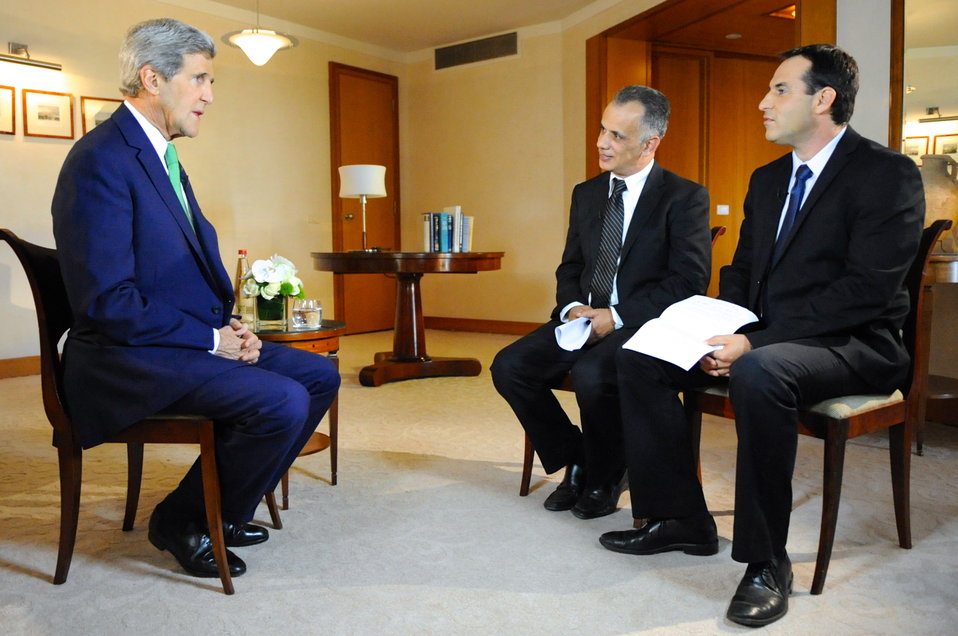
Secretary Kerry Participates in a Joint Interview With an Israeli and a Palestinian Journalist in Jerusalem

U.S. Secretary of State John Kerry sits across from Maher Shalabi of the Palestinian Broadcasting Corp. and Udi Segal of Israel Channel 2 before a joint interview focused on Middle East peace talks in Jerusalem on November 7, 2013.